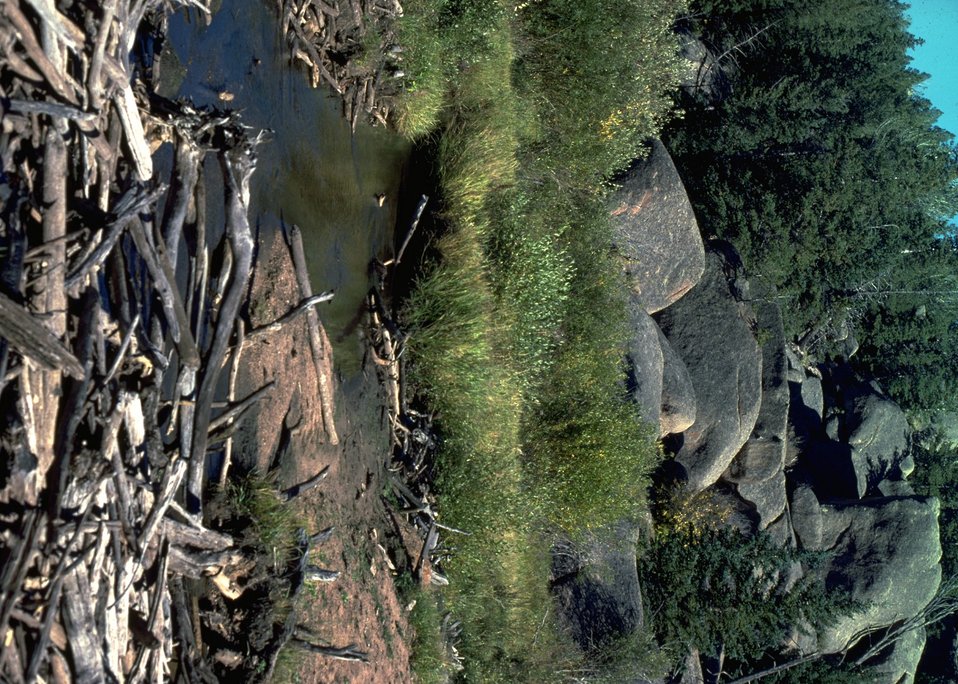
Scenic view along a rocky creek.